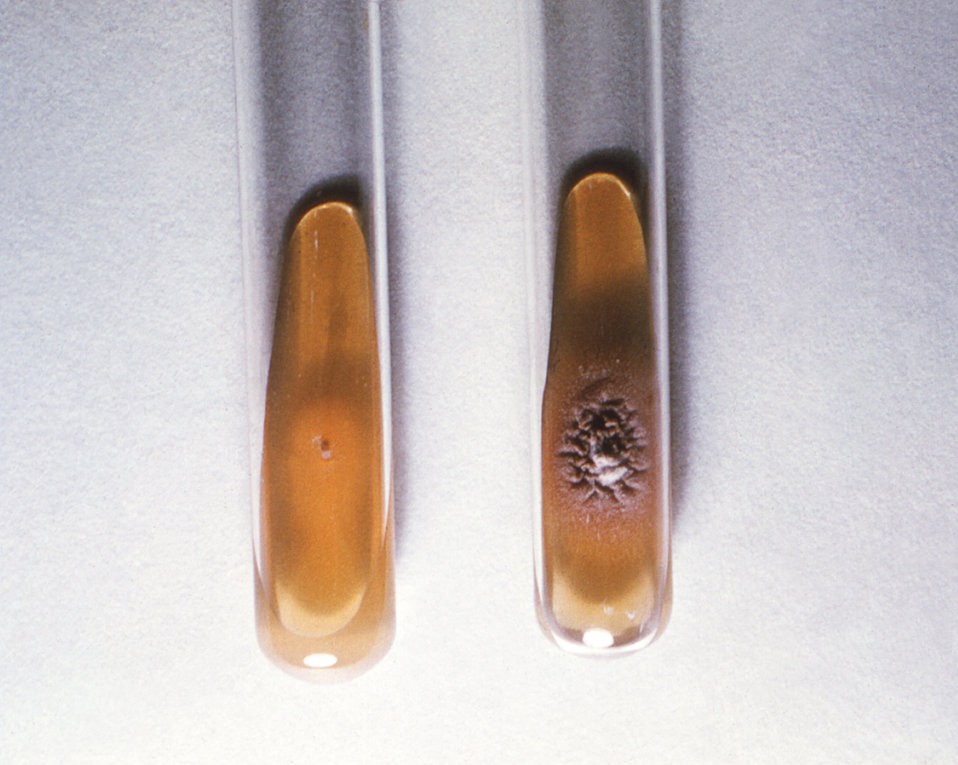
This image depicts two slant cultures, each containing an agar-based growth medium, which had been inoculated with Trichophyton violaceum fungal organisms. The tube on the left contained a medium rich in the protein, casein, while the tube on the right contained casein, and vitamin B1, thiamine.